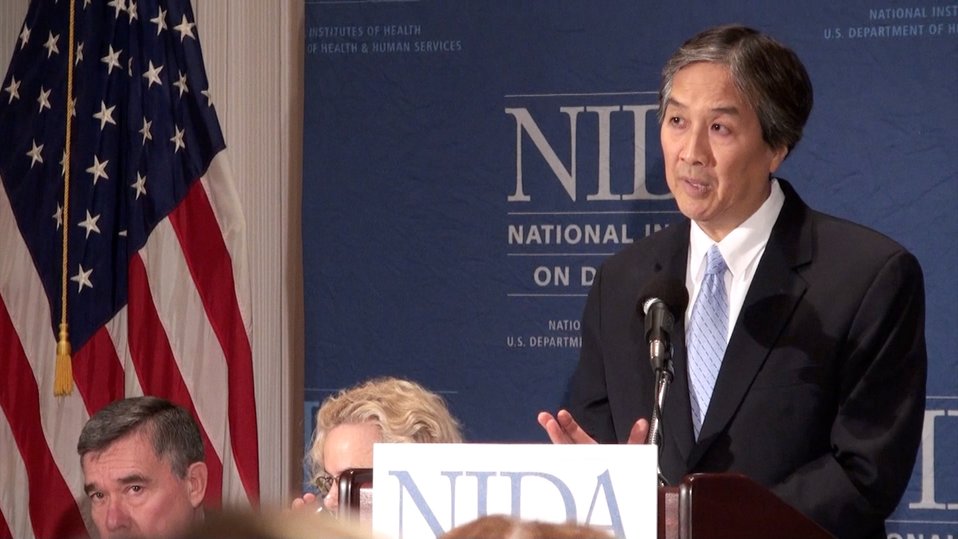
Dr. Howard Koh, DHHS